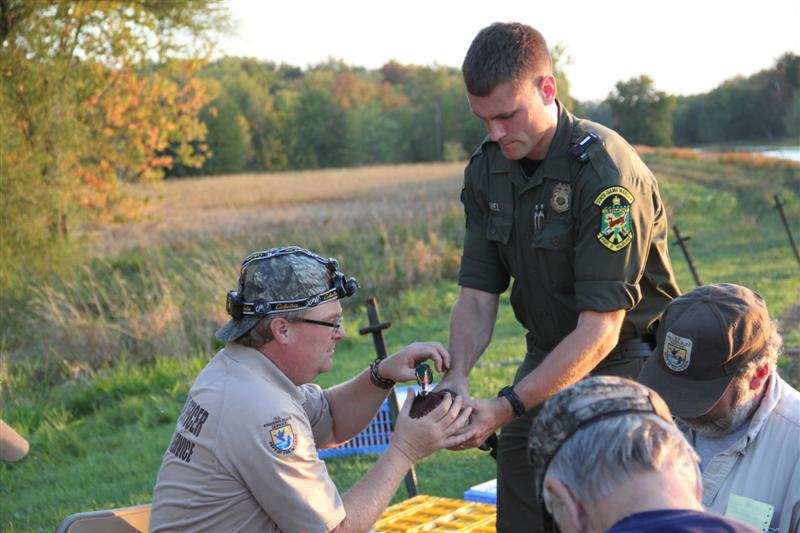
Waterfowl Banding

Missisquoi NWR and VTFWD personnel banding waterfowl September 2012.

credit: ken sturm/usfws